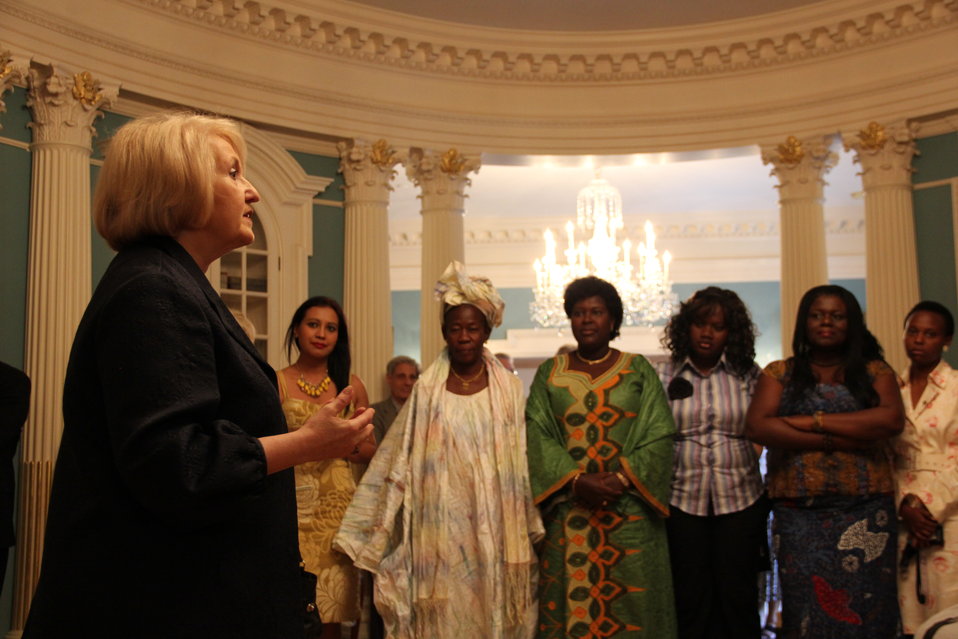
Ambassador Verveer Greets African Women's Entrepreneurship Program Participants

Ambassador-at-Large for Global Women's Issues Melanne Verveer greets participants in the African Women's Entrepreneurship Program at the Department of State in Washington, D.C. on June 14, 2012.